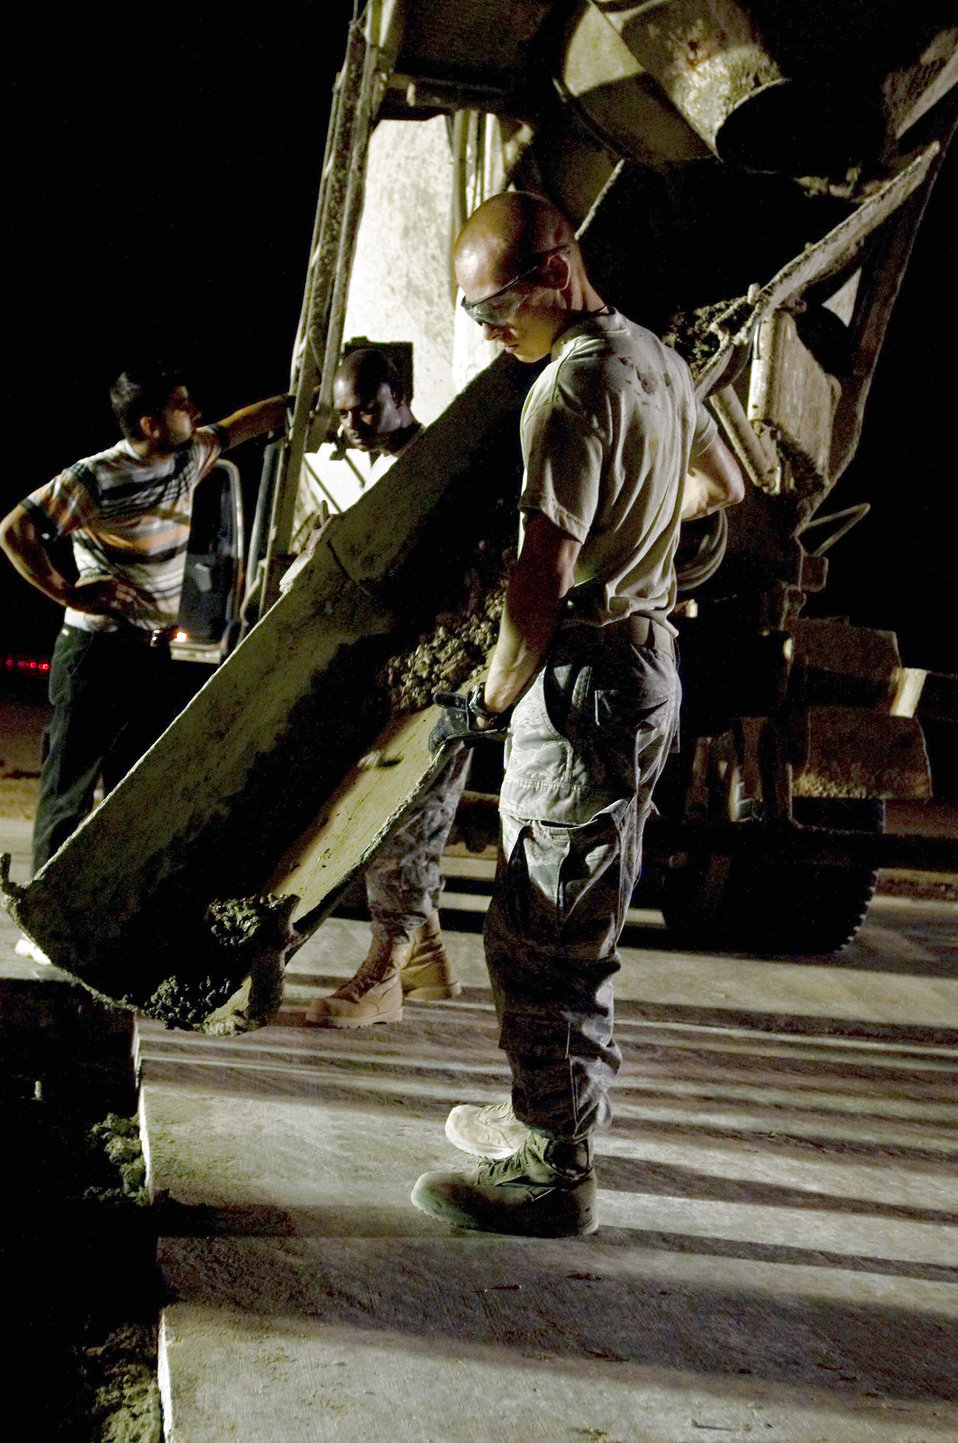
Solid foundation

Senior Airman Ian Newkirk moves cement to evenly fill holes on a taxiway Sept. 22 at Ali Base, Iraq. Extreme heat, along with normal wear and tear, can cause cracks or potholes to form, making portions of the flightline unsafe for aircraft. Airman Newkirk, a pavements and construction equipment apprentice with the 407th Expeditionary Civil Engineer Squadron, is deployed from Malmstrom Air Force Base, Mont.